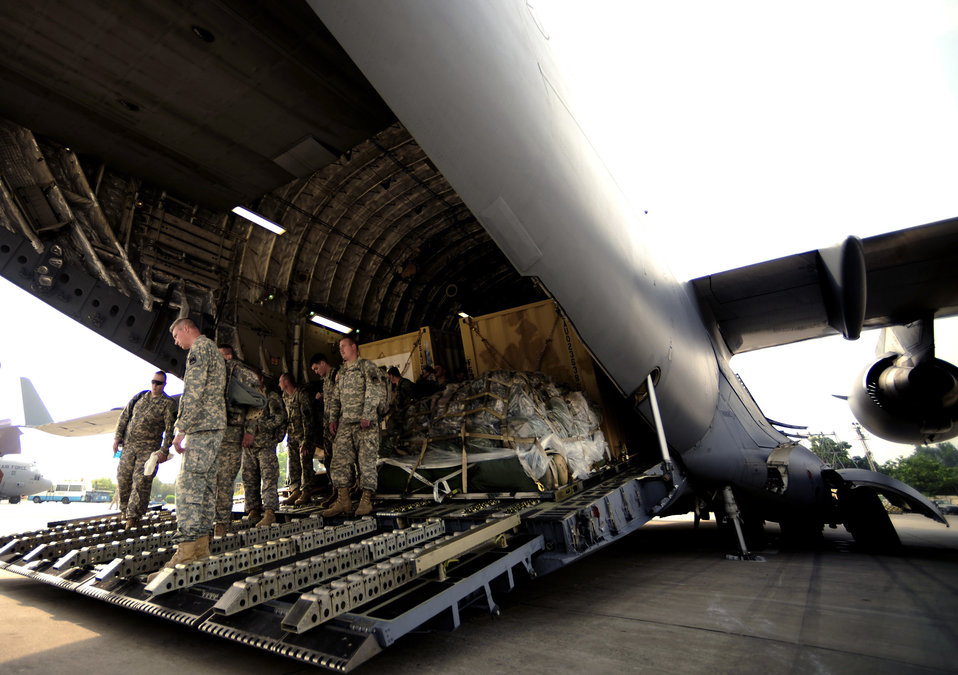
FLOOD RELIEF PAKISTAN

Soldiers from the 16th Combat Aviation Brigade from Fort Wainwright, Alaska, arrive Sept. 1, 2010, at Chaklala Air Force Base, Pakistan, aboard a C-17 Globemaster III aircraft in support of flood relief efforts. The 16th CAB also brought two UH-60 Blackhawk helicopters.